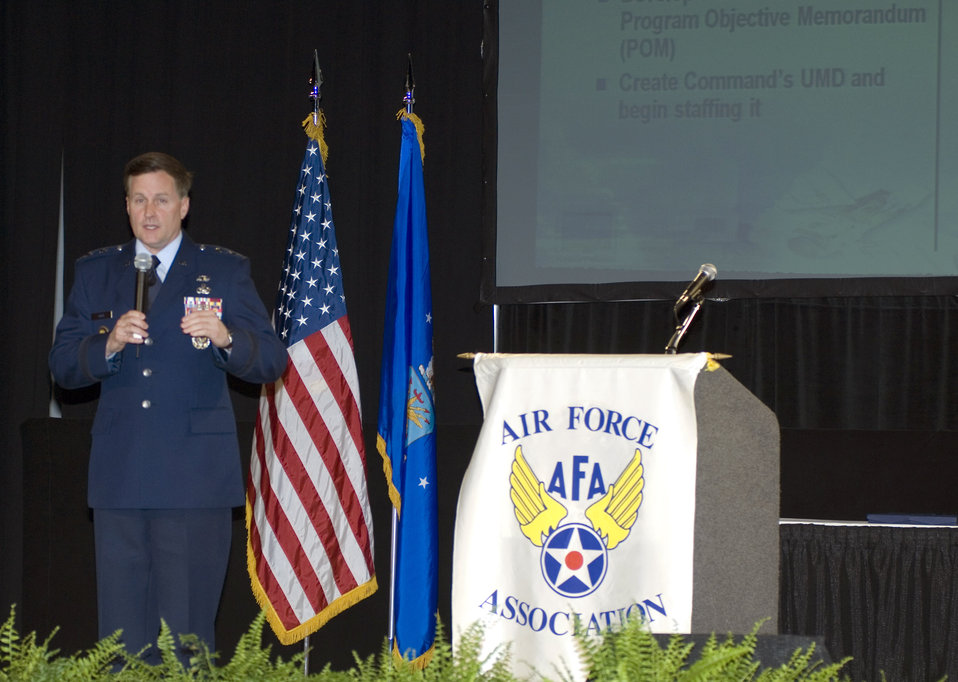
General Lord speaks at AF Cyberspace Symposium

Maj. Gen. William T. Lord addresses the Air Force's 2nd annual Cyberspace Symposium June 18 in Marlborough, Mass. General Lord is the commander of Air Force Cyber Command (Provisional).